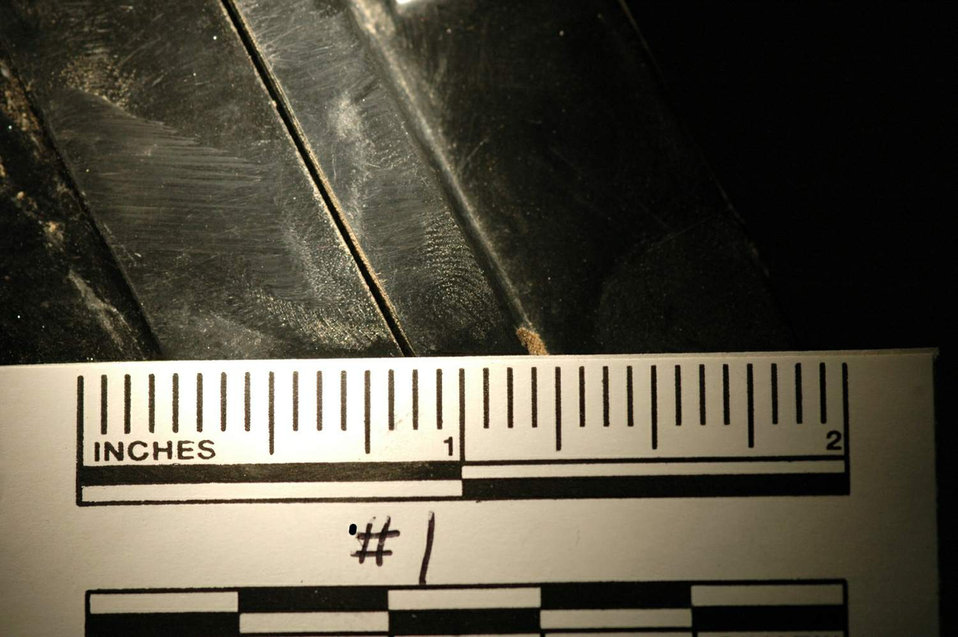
Battlefield detectives fight with fingerprints

A latent fingerprint is measured and photographed by a Weapons Intelligence Team member during evidence exploitation from a recent improvised explosive device incident June 16 at Al Asad Air Base, Iraq. WIT members are skilled in IED construction, fingerprinting, biometrics, foreign weapons, media exploitation and sensitive sight exploitation.